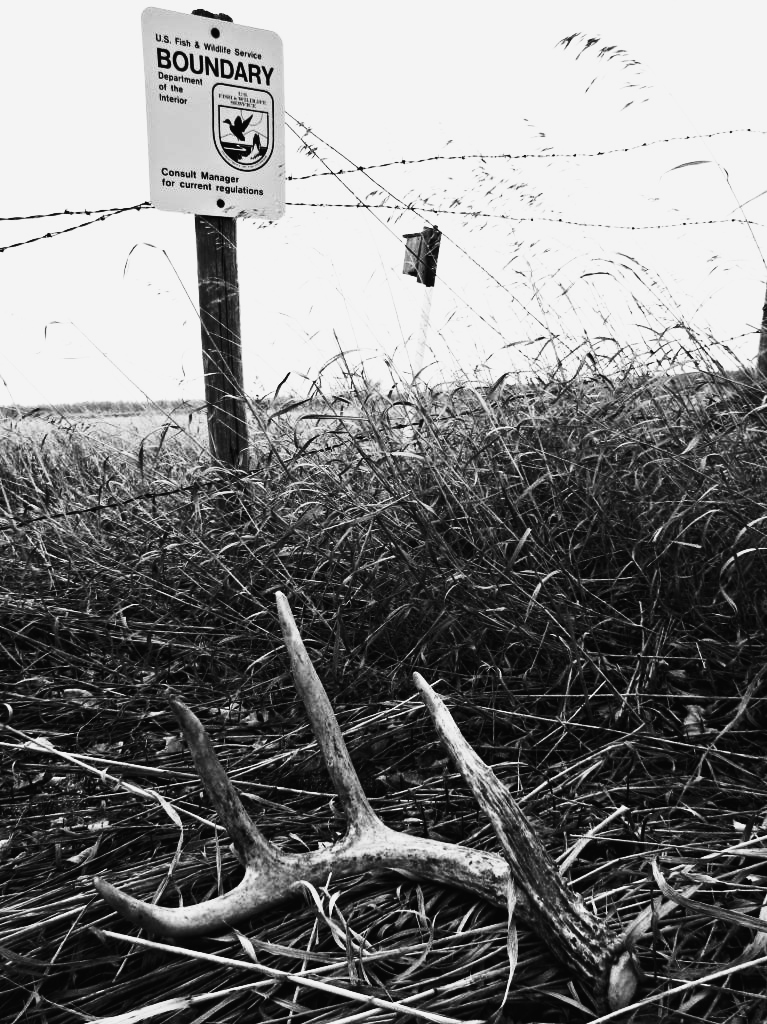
Shed

We get a lot of overnight visits at the hatchery from the critters that live on Lake Yankton island. Deer are some of our most frequent visitors and it's getting to be that time of year where they start to lose their antlers to make room for new growth. Here is a whitetail shed that we found out by our earth ponds in mid-January.